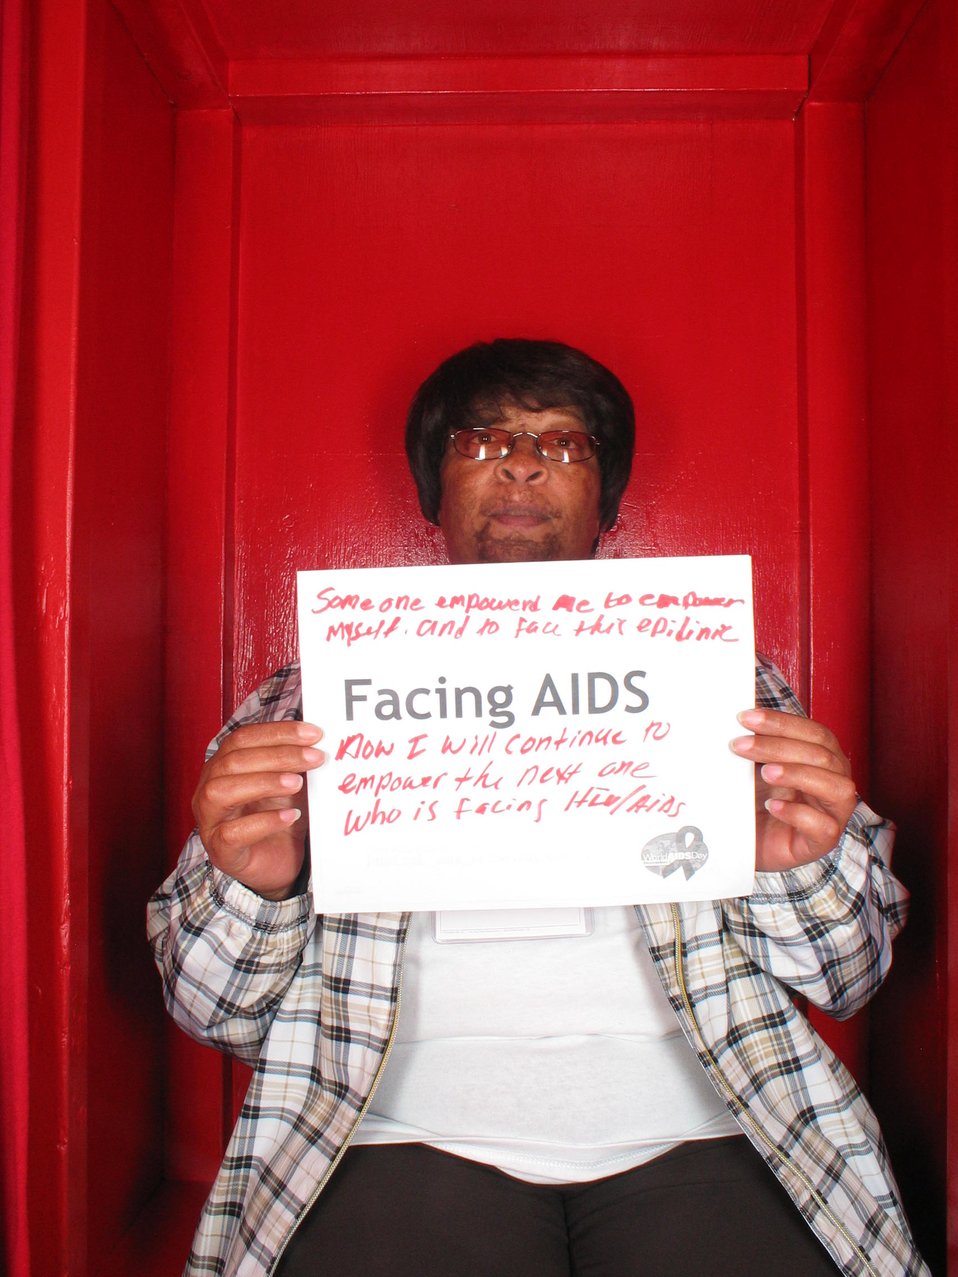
Facing AIDS Someone empowered me to empower myself and to face this epidemic. Now I will continue to empower the next one who is facing HIV/AIDS.